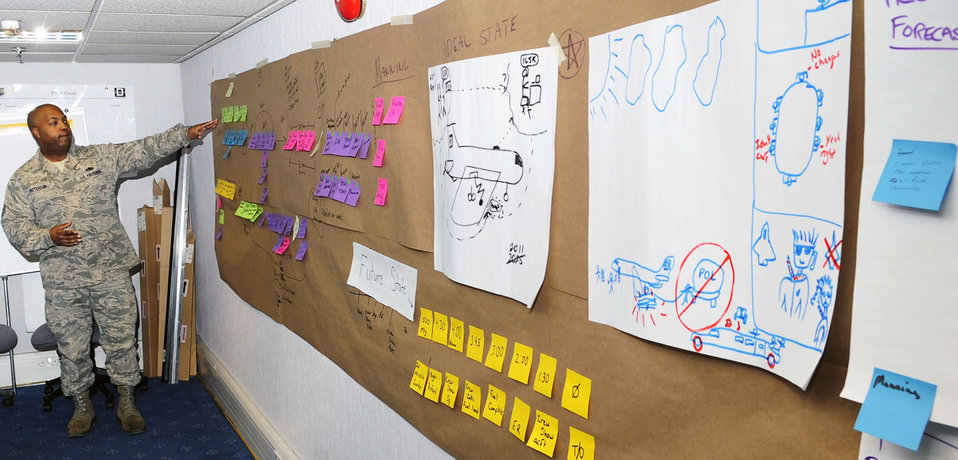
AFSO21 event helps plan fuel conservation initiatives

Master Sgt. Jonas Patterson explains the current state of refueling operations during an Air Force Smart Operations for the 21st Century event Jan. 20, 2011, at Royal Air Force Mildenhall, England. The purpose of the meeting was to determine how to reduce the yearly wasted fuel cost from $2.3 million down to $1 million. Sergeant Patterson is the 100th Aircraft Maintenance Squadron specialist section chief.